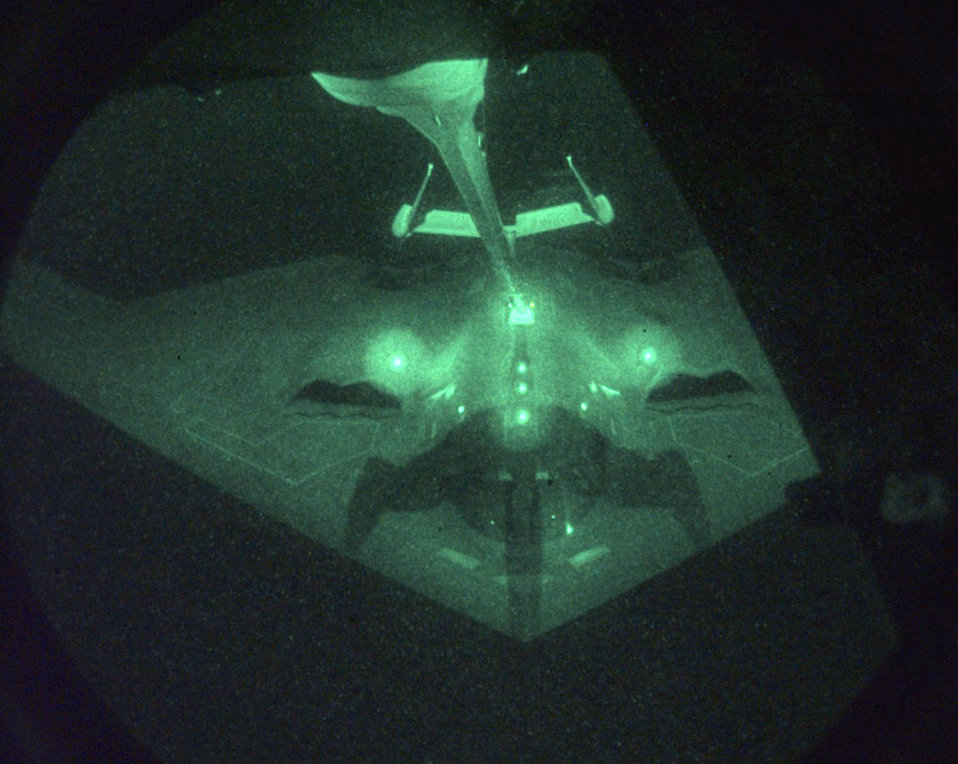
Night mission

FILE PHOTO -- A B-2 Spirit bomber refuels from a KC-10 Extender after completing a mission in support of NATO Operation Allied Force.